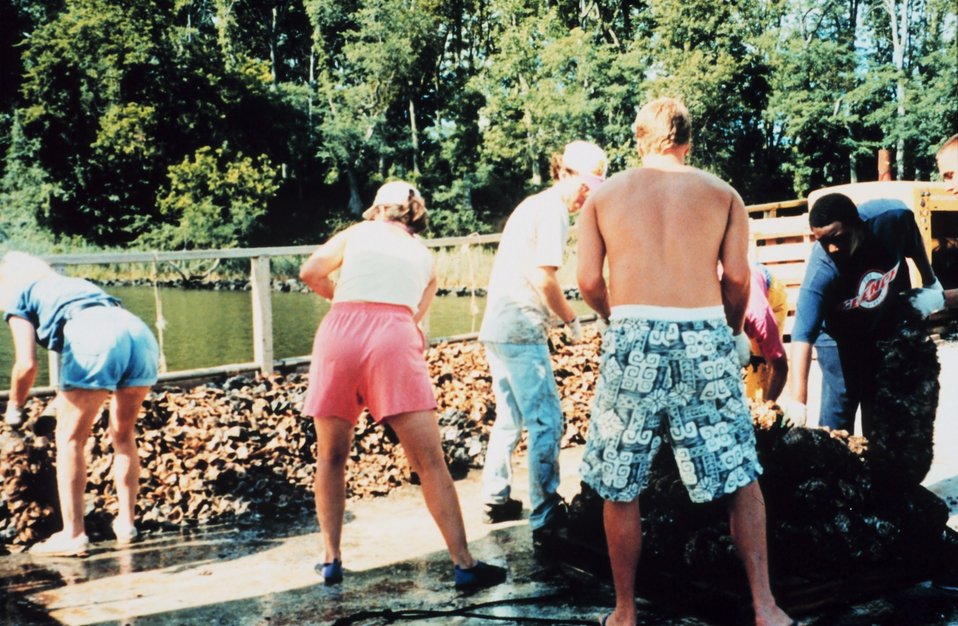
Volunteers assist the Oyster Recovery Partnership in their effort to transplant oyster spat before the population is decimated by the Stylochus flatworm. Pallets are loaded with bags containing the spat and brought on board the ROBERT LEE.